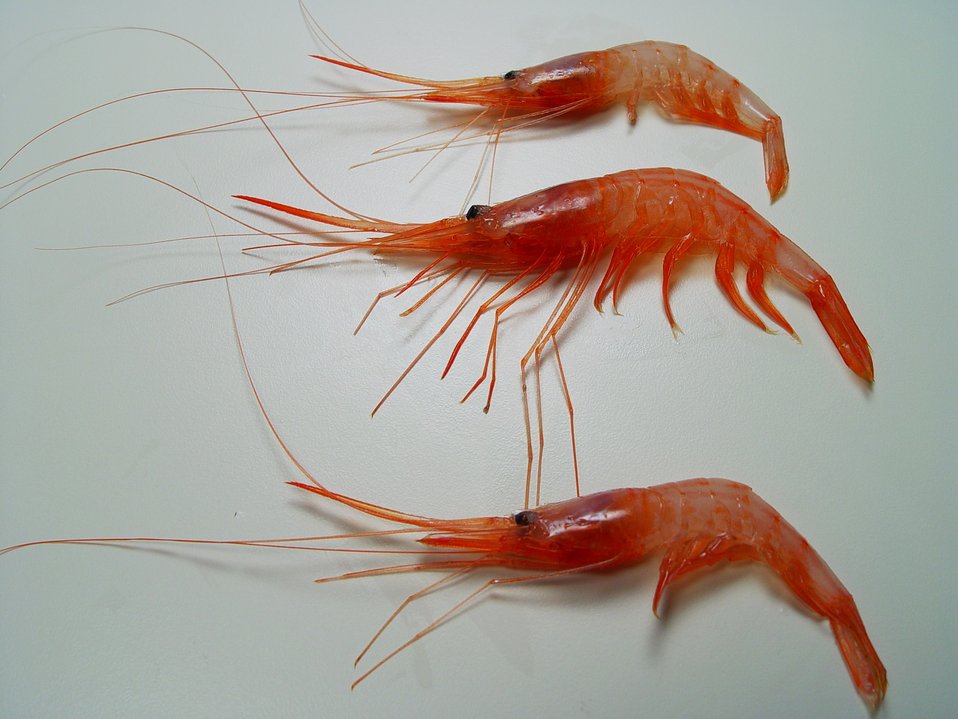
Soldier striped shrimp ( Plesionika edwarsii )